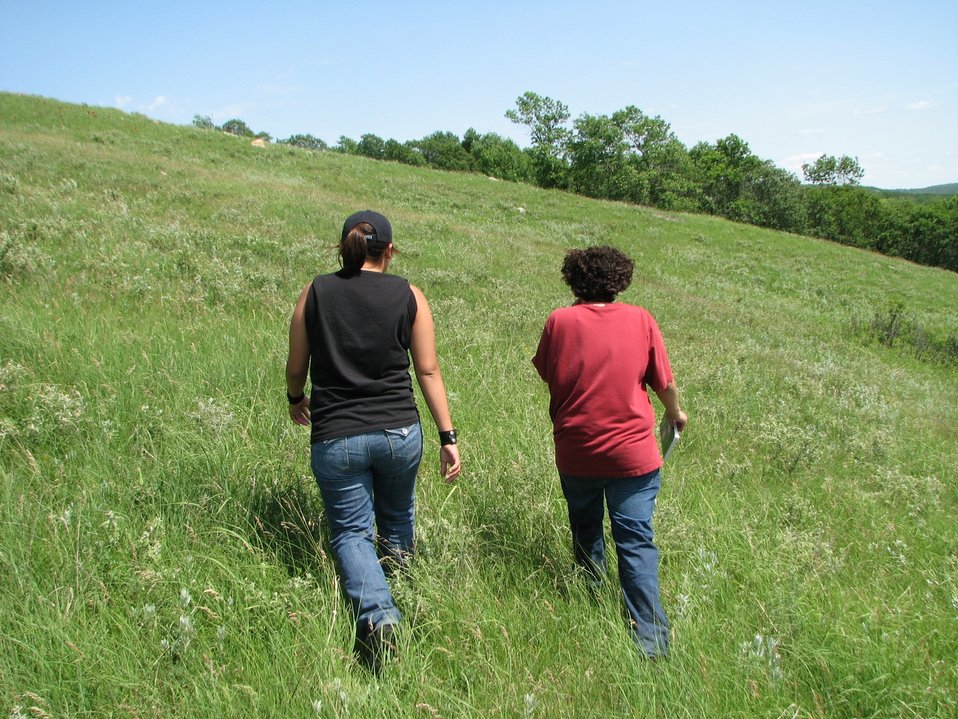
Plant Inventory

Youth Conservation Corps students inventory plants at Sullys Hill National Game Preserve in North Dakota.